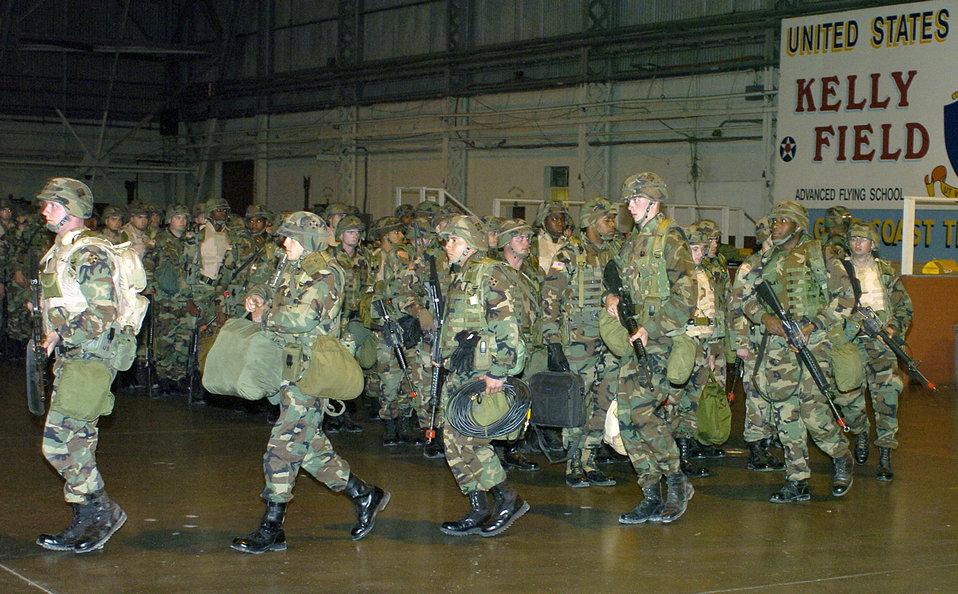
Soldiers deploy to Lackland for quick-reaction exercise

LACKLAND AIR FORCE BASE, Texas -- Soldiers from the 4th Infantry Division out of Fort Hood, Texas, quickly move out of a hangar here to be driven to a quick reaction force exercise here Dec. 8. The mission was to provide a flexible and responsive unit to a specific region in the event of a domestic threat or incident. The exercise here trained the Soldiers to prepare for homeland defense missions.